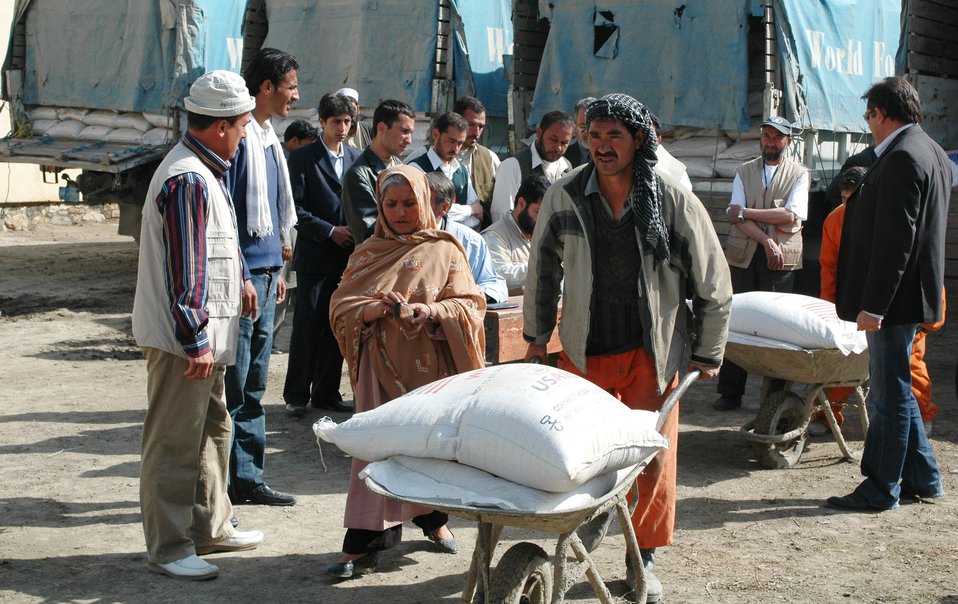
2009 WFP food distribution